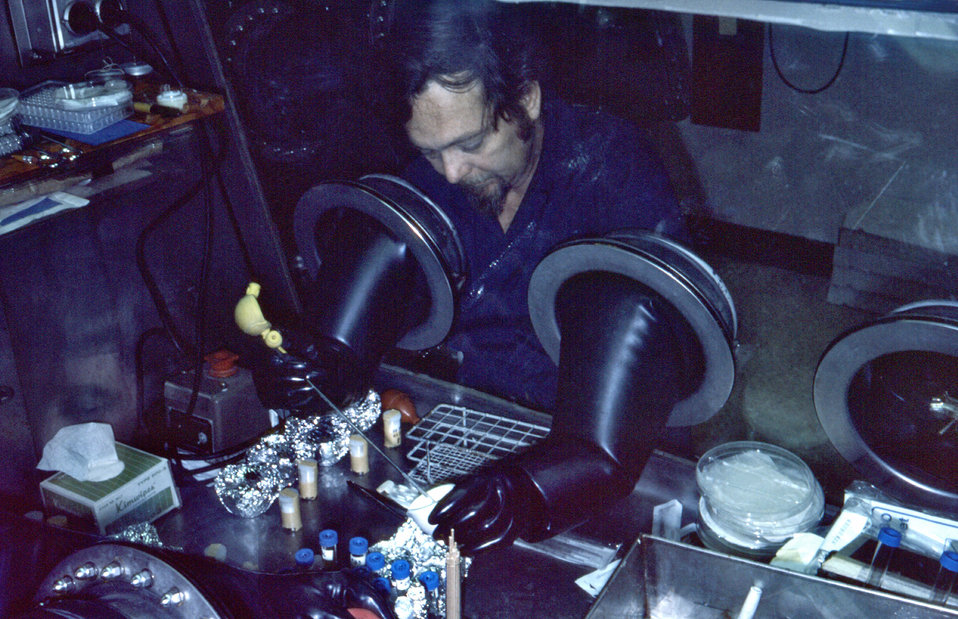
This photograph showed CDC virologist Karl M. Johnson, M.D., working with specimens through the sealed portals of a 'glove box' during a 1975 Marburg vector investigation.